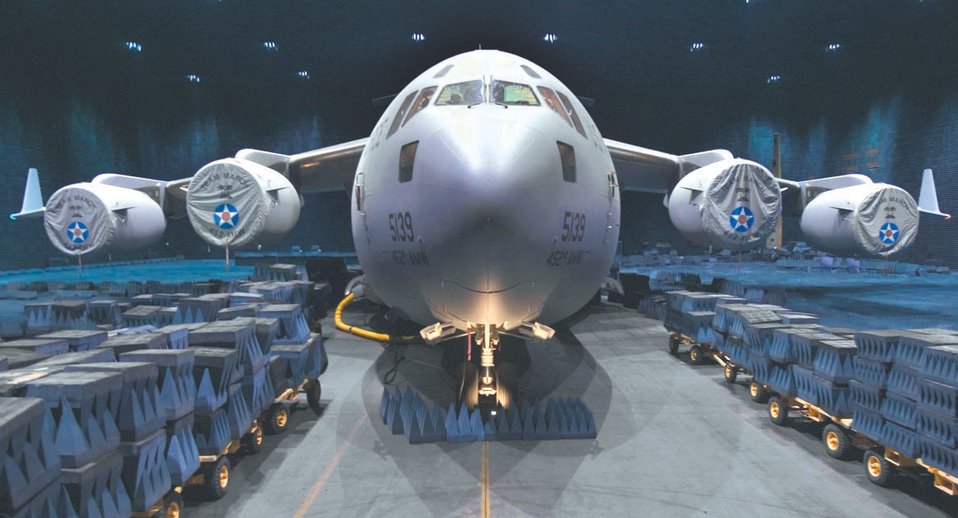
Radar testing

EDWARDS AIR FORCE BASE, Calif. (AFPN) -- A C-17 Globemaster III from March Air Reserve Base, Calif., sits in the Benefield Anechoic Facility after undergoing radar testing earlier in the week.